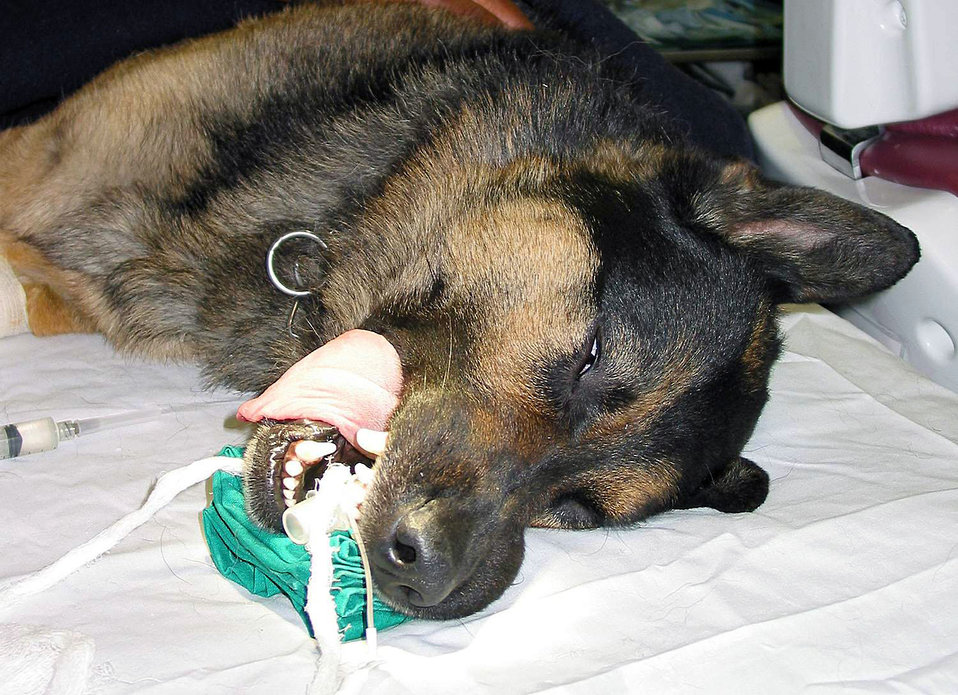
Canine root canal

OPERATION IRAQI FREEDOM -- Clinton, a Danish military working dog, is sedated before receiving a root canal to fix a broken canine tooth May 25. Lt. Col. (Dr.) Steven Wire, the 376th Expeditionary Medical Group dentist, performed the procedure.